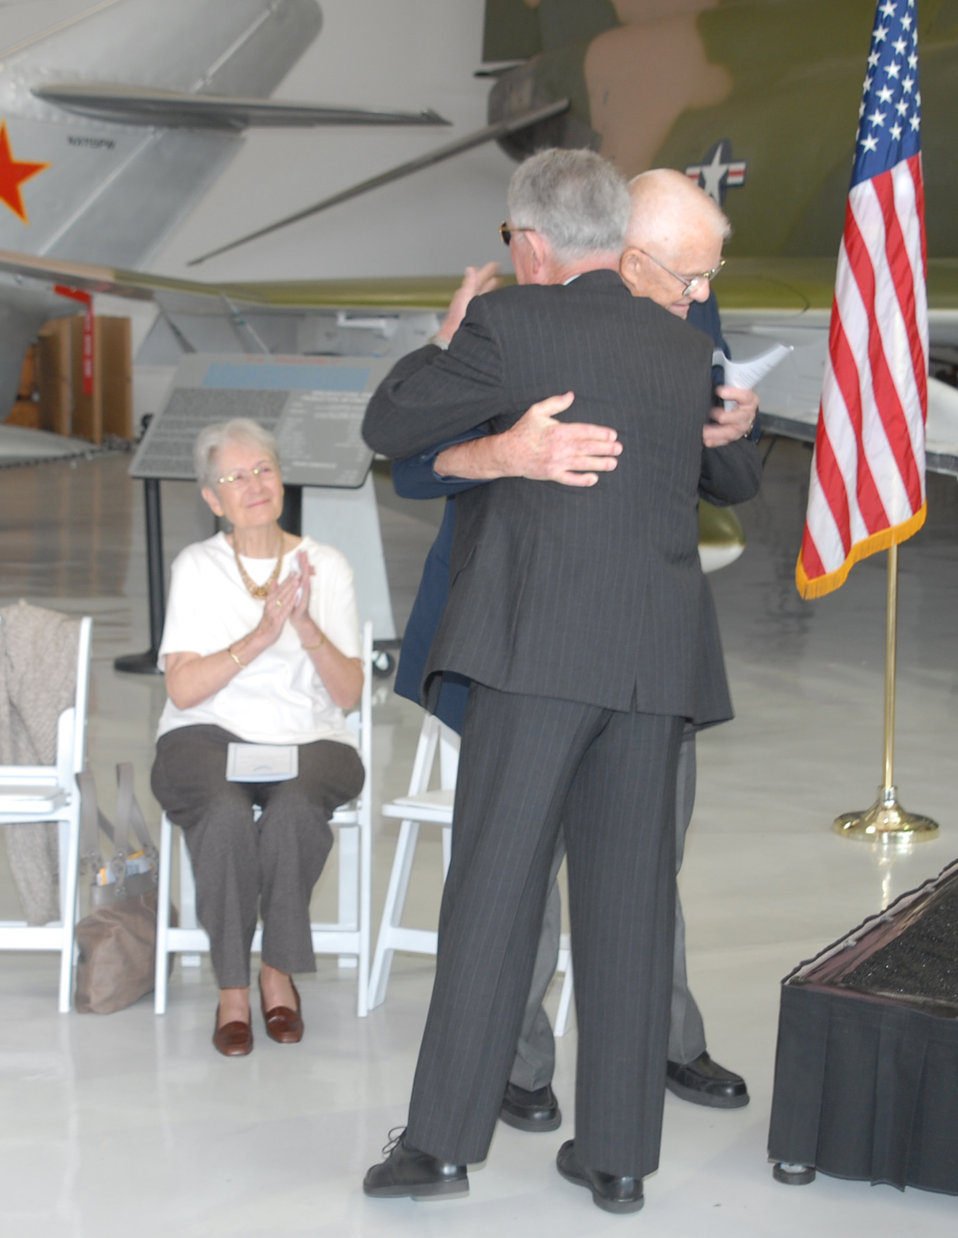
Ring is returned

Retired Col. James Hivner and retired Navy Cmdr. Rick Tolley embrace Nov. 11 at the Cavanaugh Flight Museum in Addison, Texas, as Phyllis Hivner looks on. Commander Tolley had taken on the task of finding the owner of a wedding ring that had been confiscated by North Vietnam soldiers from an American prisoner of war in 1965. The ring had been found recently in Vietnam and eventually passed to Commander Tolley who searched for its owner until he found Colonel Hivner. Family, friends and Airmen from Sheppard Air Force Base, Texas, traveled to the museum to witness the return of the ring.